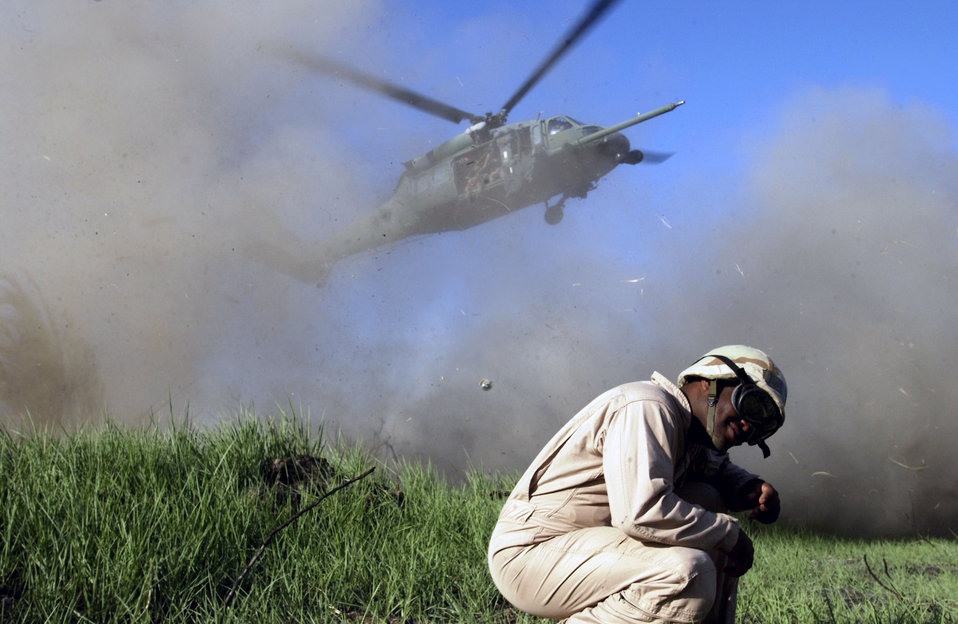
Incoming Pave Hawk

OPERATION IRAQI FREEDOM -- Tech. Sgt. Selwyn McConney waits for an HH-60G Pave Hawk to land during an urban operations training exercise near Baghdad International Airport, Iraq. McConney is a weapons specialist assigned to the 301st Rescue Squadron at Patrick Air Force Base, Fla.